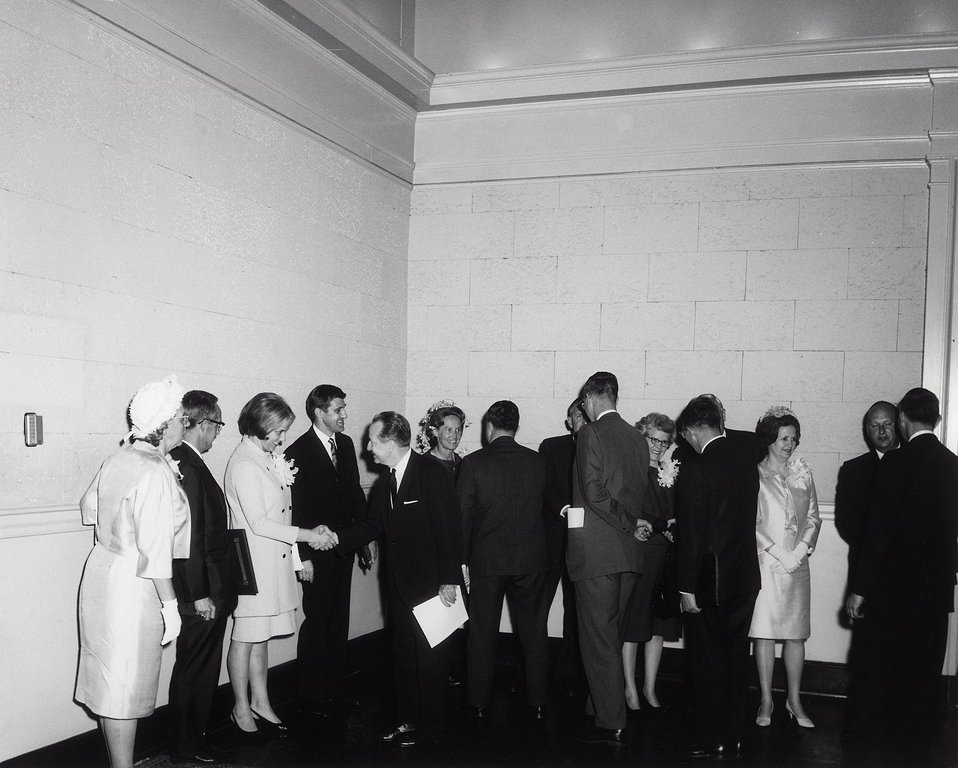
7th E.O. Lawrence Award Ceremony, April 27, 1966, Wash., D.C. Receiving Line at John Wesley Powell Auditorium.